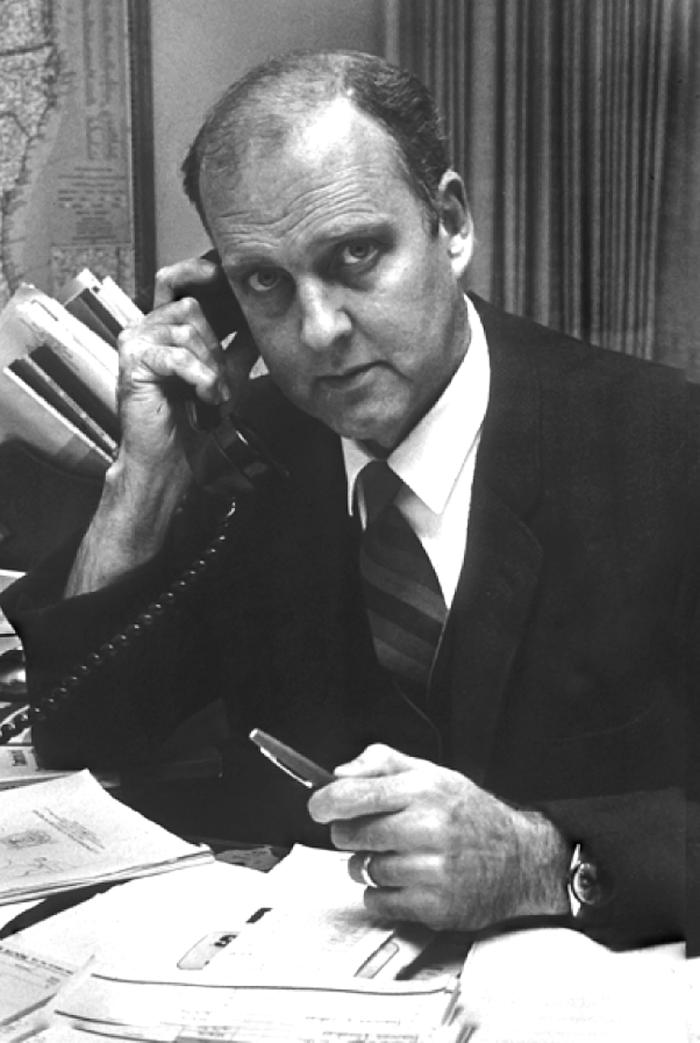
Michael B. Gregg, M.D. (1930 - 2008)